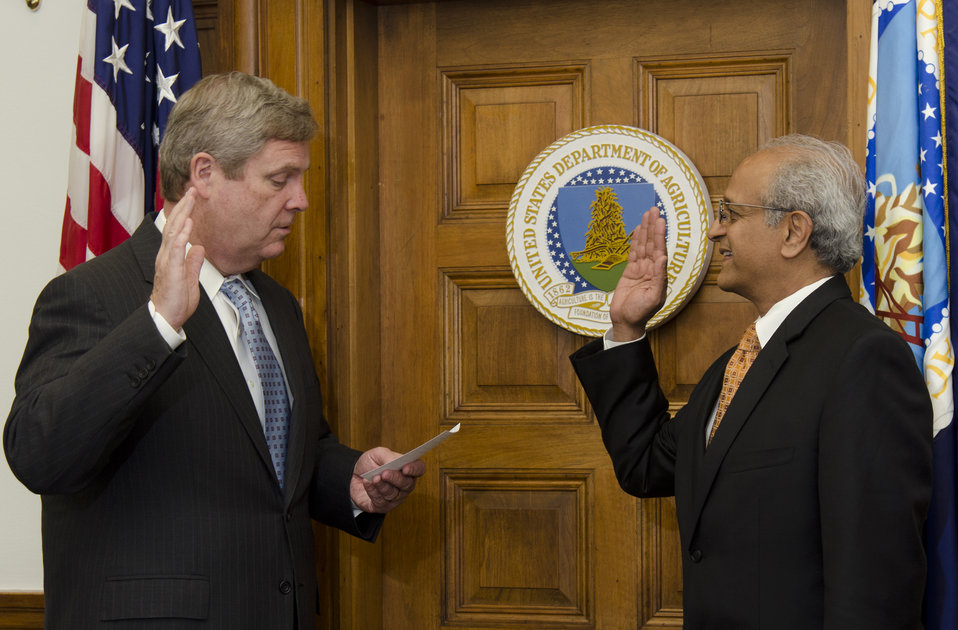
Agriculture Secretary Tom Vilsack swears in the Director of National Institute of Food and Agriculture (NIFA) Dr. Sonny Ramaswamy at the U.S. Department of Agriculture in Washington, D.C. on Tuesday, May 8, 2012.